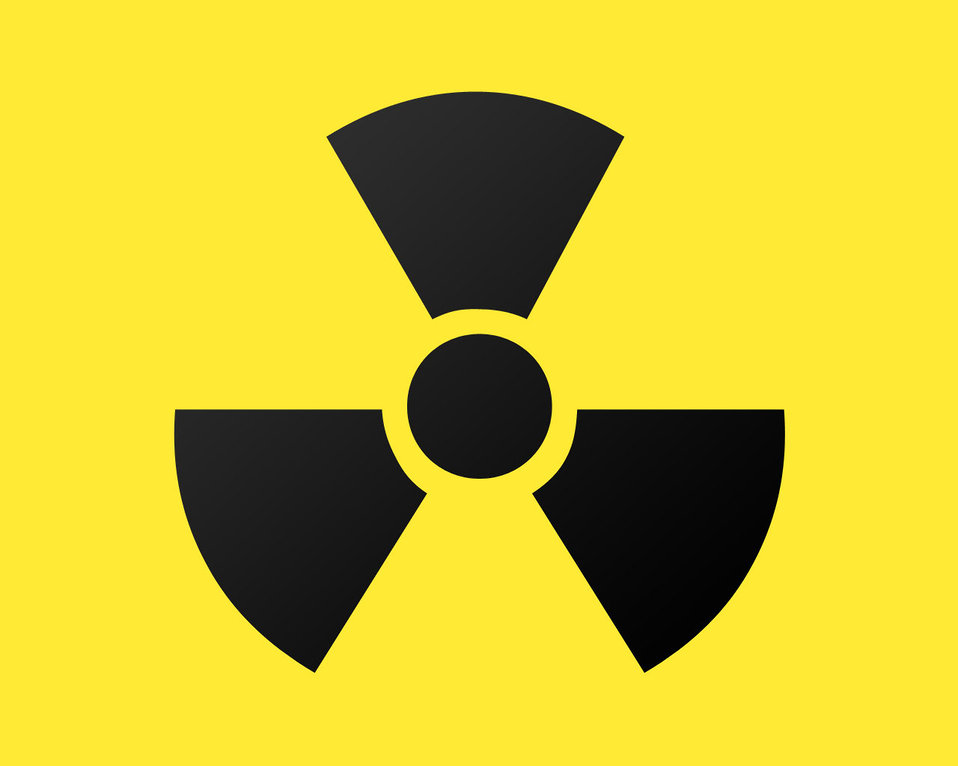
Radioactive sign

A radioactive sign.